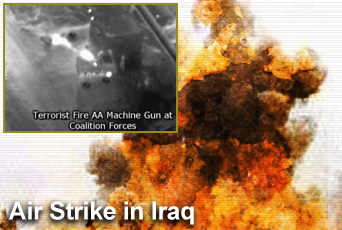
Air strikes target, kill al-Qaeda terrorists in Taji, Iraq

Coalition forces targeted members of an al-Qaeda network March 2 during an air strike operation west of Taji, Iraq.
Intelligence reports indicated that the network is responsible for threats to coalition aircraft. It is believed that key terrorists were killed during the air strike.